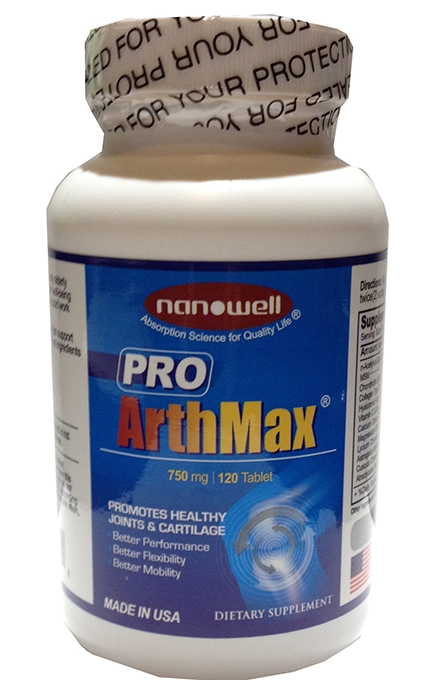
RECALLED – Dietary Supplement

January 13, 2014 – Product Recall – Human Science Foundation Issues Voluntary Nationwide Recall of Pro ArthMax Due to Undeclared Active Pharmaceutical Ingredients.